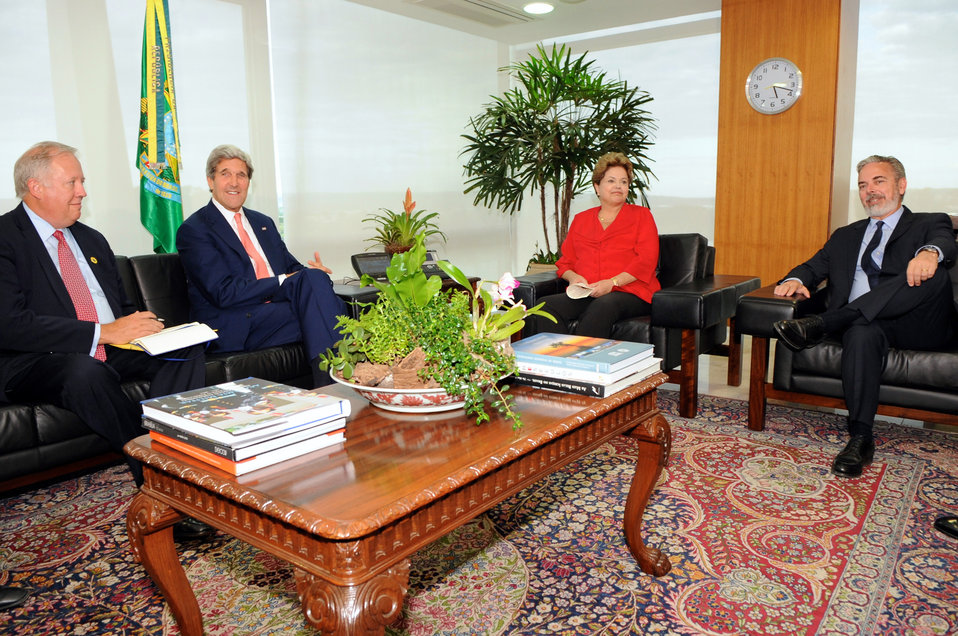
Secretary Kerry Meets With Brazilian President Rousseff

U.S. Secretary of State John Kerry and Brazilian President Dilma Rousseff, flanked by U.S. Ambassador to Brazil Thomas Shannon and Brazilian Foreign Minister Antonio Patriota, respectively, pose for photographers before a bilateral discussion in President Rousseff's office in Brasilia, Brazil, on August 13, 2013.